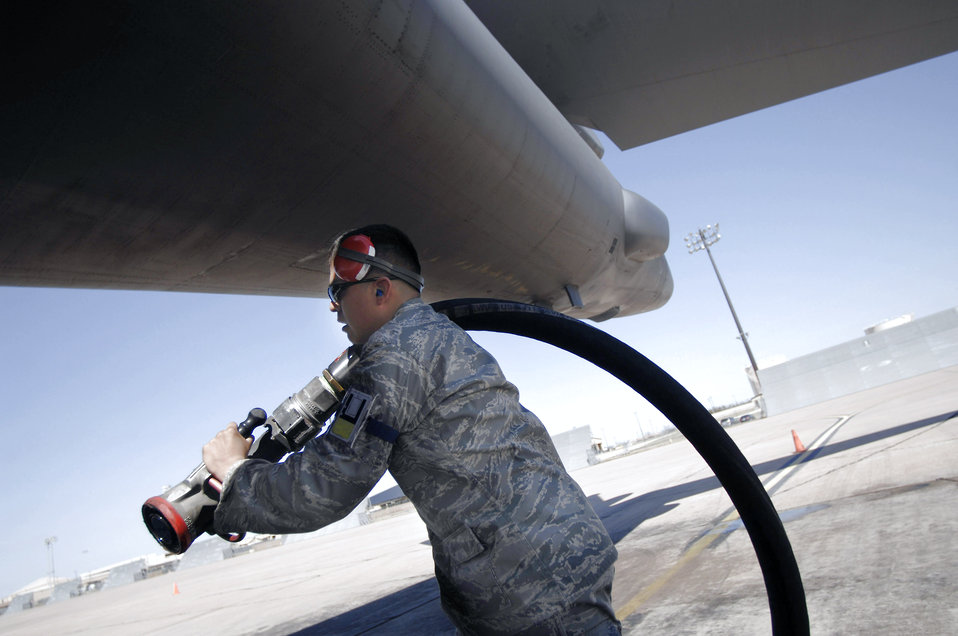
Gas 'er up!

Airman Jesus Abalos pulls out a hose to refuel a B-1B Lancer March 19 at Dyess Air Force Base, Texas, prior to its record-setting supersonic flight using a 50/50 blend of synthetic and petroleum fuel over the White Sands Missile Range airspace in south-central New Mexico.